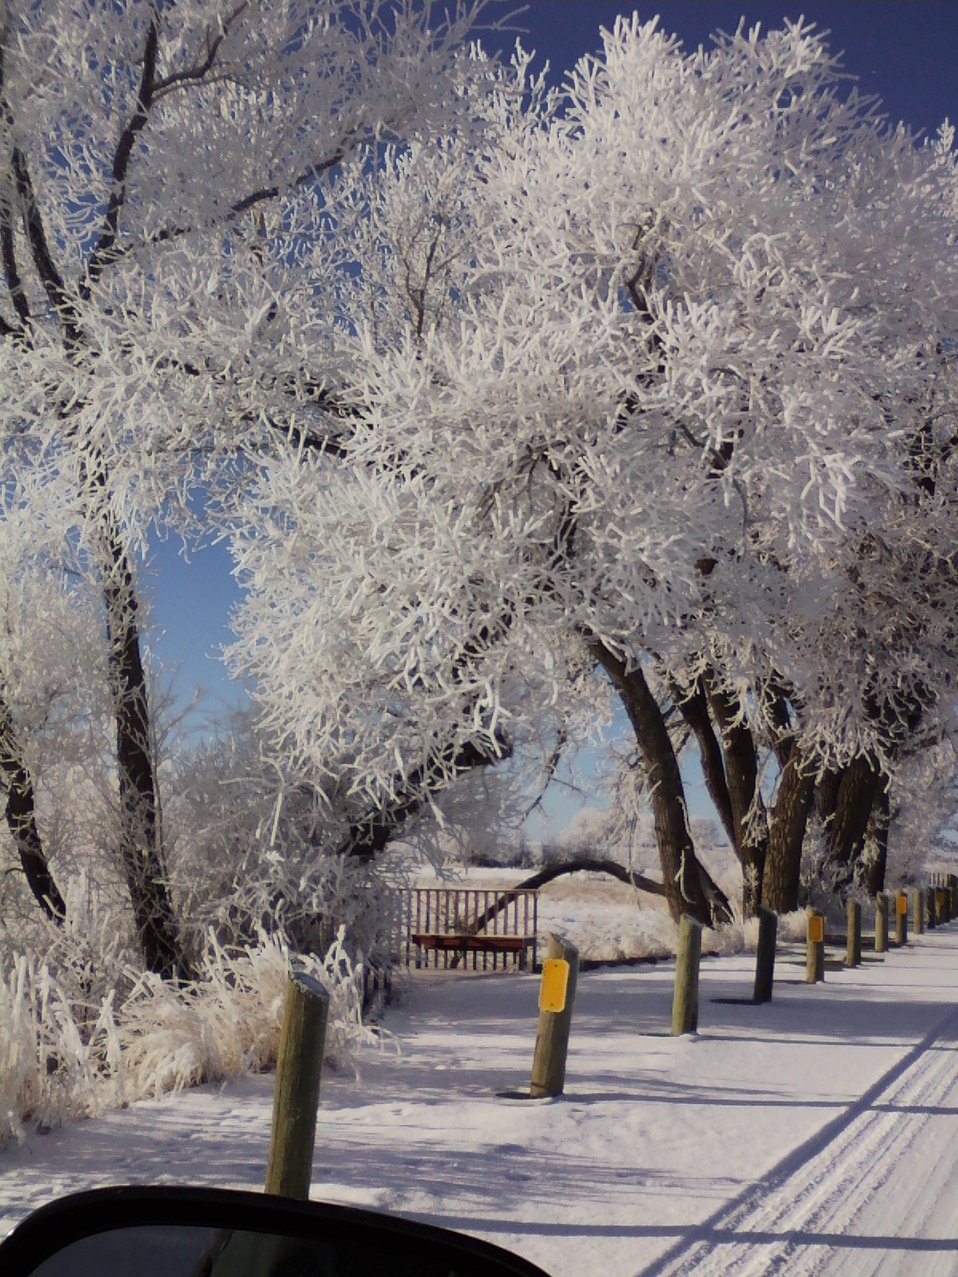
Bowdoin NWR Entrance in the Winter

The entrance road to the Bowdoin National Wildlife Refuge in the Winter.